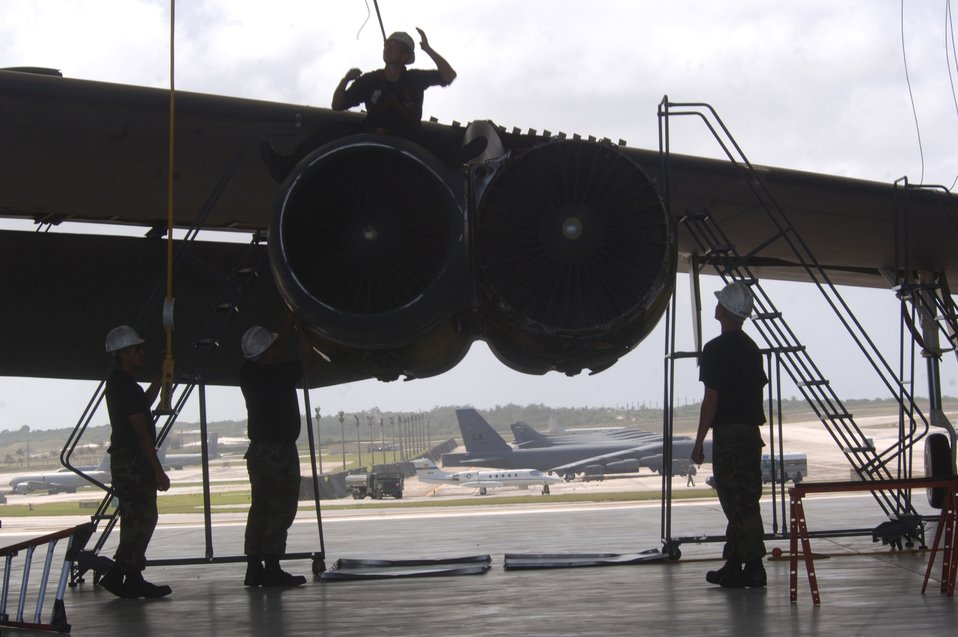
Maintaining the fortress

ANDERSEN AIR FORCE BASE, Guam -- B-52 Stratofortress mechanics inspect an aircraft engine during phase maintenance. The Airmen are deployed from the 2nd Maintenance Squadron at Barksdale Air Force Base, La.